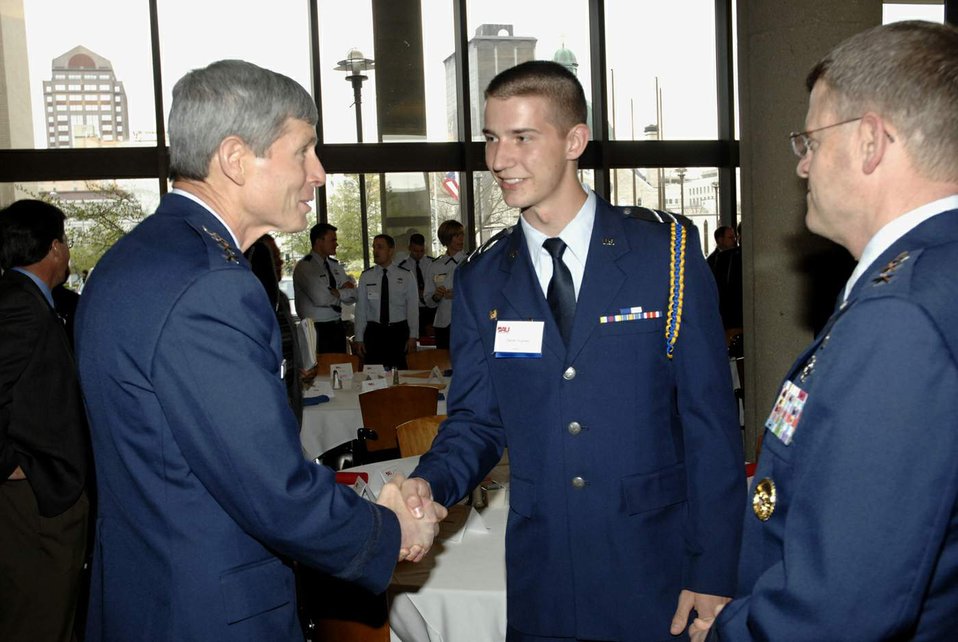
CSAF at acquisition conference

Gen. Norton Schwartz, Air Force chief of staff, congratulates University of Dayton Air Force ROTC Cadet 3rd Class Daniel Hughes on his decision to pursue a career as an Air Force officer, while Lt. Gen. Mark Shackelford, military deputy to the assistant secretary of the Air Force for acquisition, looks on. Generals Schwartz and Shackelford came to Dayton, Ohio, April 21 to congratulate and to challenge the Air Force acquisition workforce during DOD Acquisition Insight Days. The event was organized by officials at Defense Acquisition University - Midwest Region and provided workshops, training and a forum for acquisition professionals to discuss ways to improve their processes.